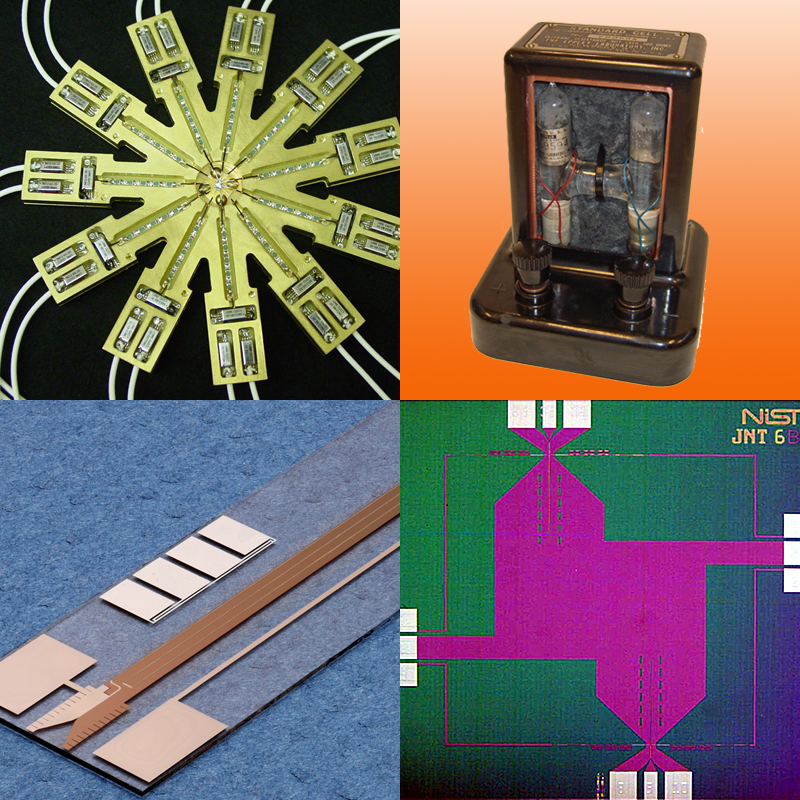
Voltage Standards

Collage of images from NIST museum of voltage standards

Credit: NIST photos arranged by Kelly Talbott